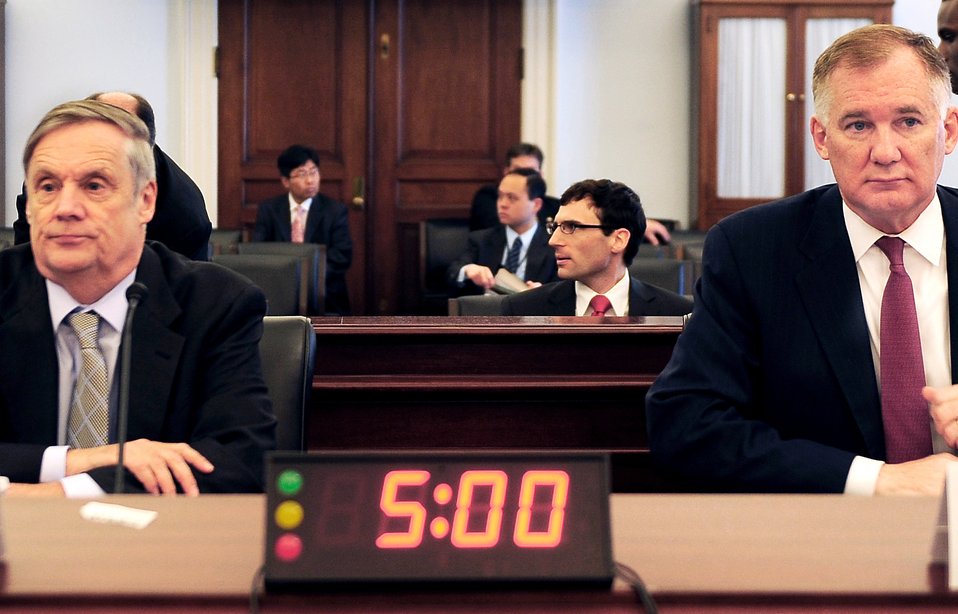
Budget balances security, economics, Lynn tells Congress

Deputy Defense Secretary William J. Lynn III, right, and Pentagon Comptroller Robert Hale testify at the House Budget Committee on the fiscal 2011 Defense Department budget request March 4, 2010, in Washington, D.C.